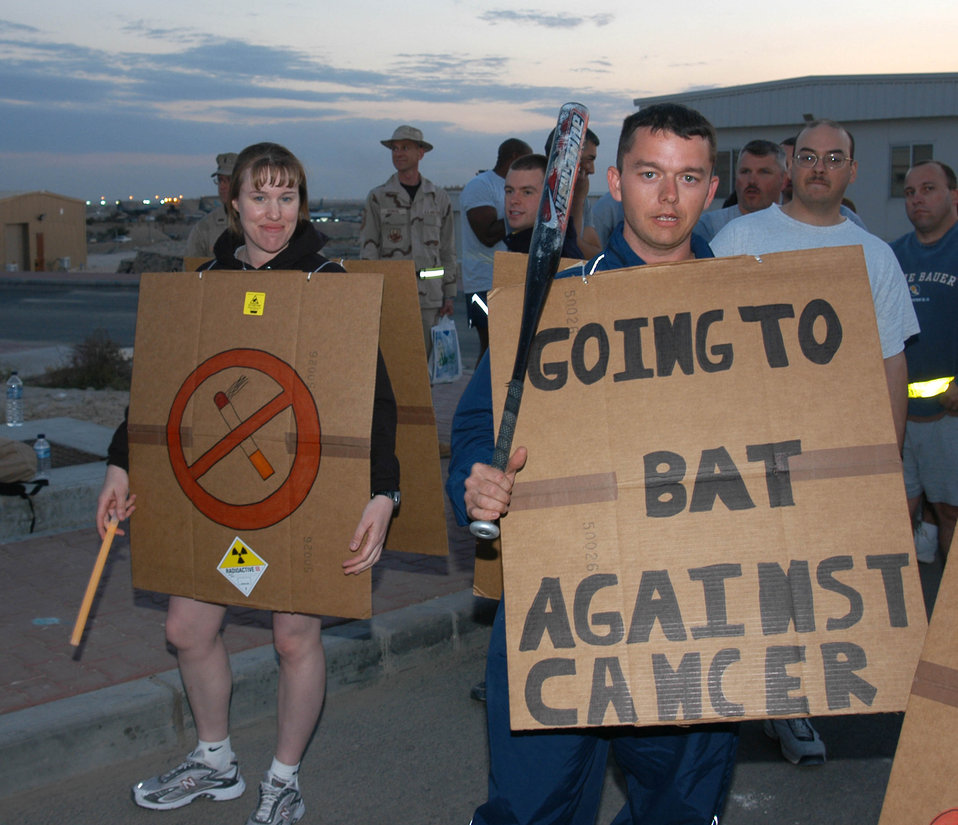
Deployed Airmen take on a different enemy

SOUTHWEST ASIA -- Tech. Sgt. Rebecca Smith and Staff Sgt. Kyle Pourciau entered the spirit portion of a Relay for Life event held at a forward-deployed location. The event raised cancer awareness among the deployed Airmen.